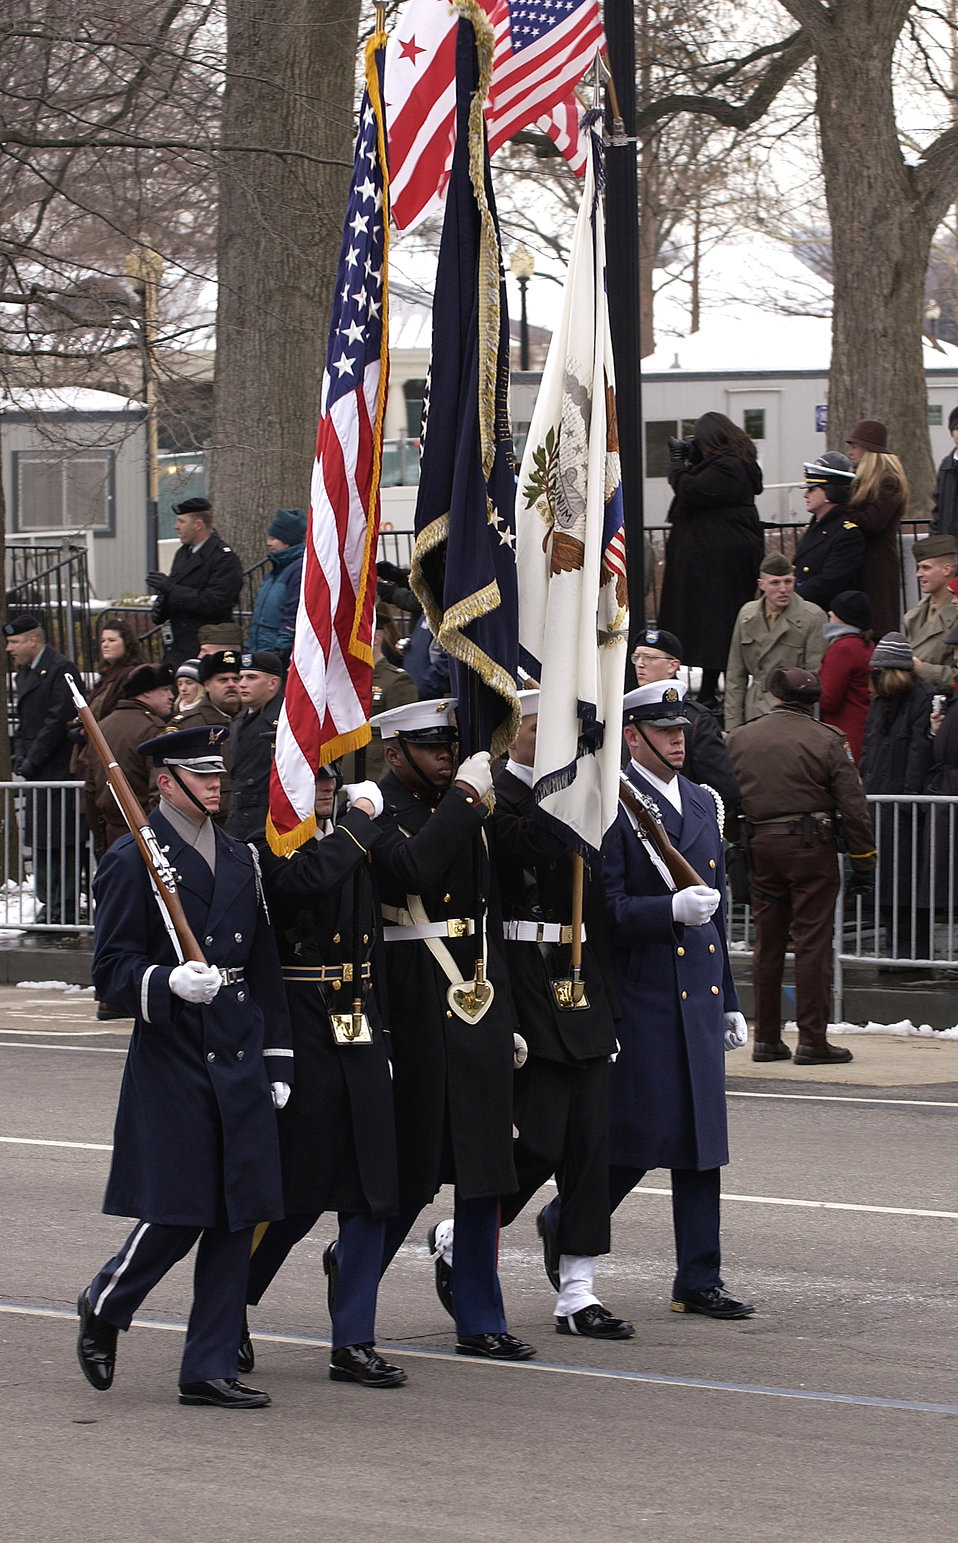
Airmen march in inaugural parade

WASHINGTON -- The Joint Service Color Guard marches during the Presidential Inaugural Parade here Jan. 20. Joint Task Force-Armed Forces Inaugural Committee officials are responsible for coordinating all military ceremonial support for the inauguration. Support included musical units, marching units, color guards, firing details and salute batteries.